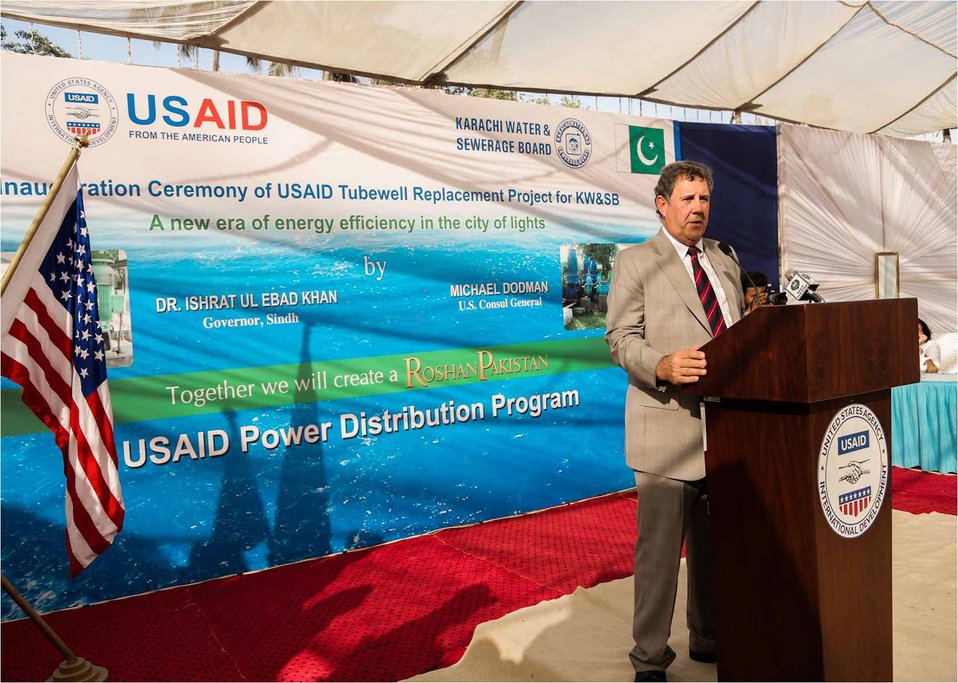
John Pullinger, PDP Field Ops, speaking at the inauguration event